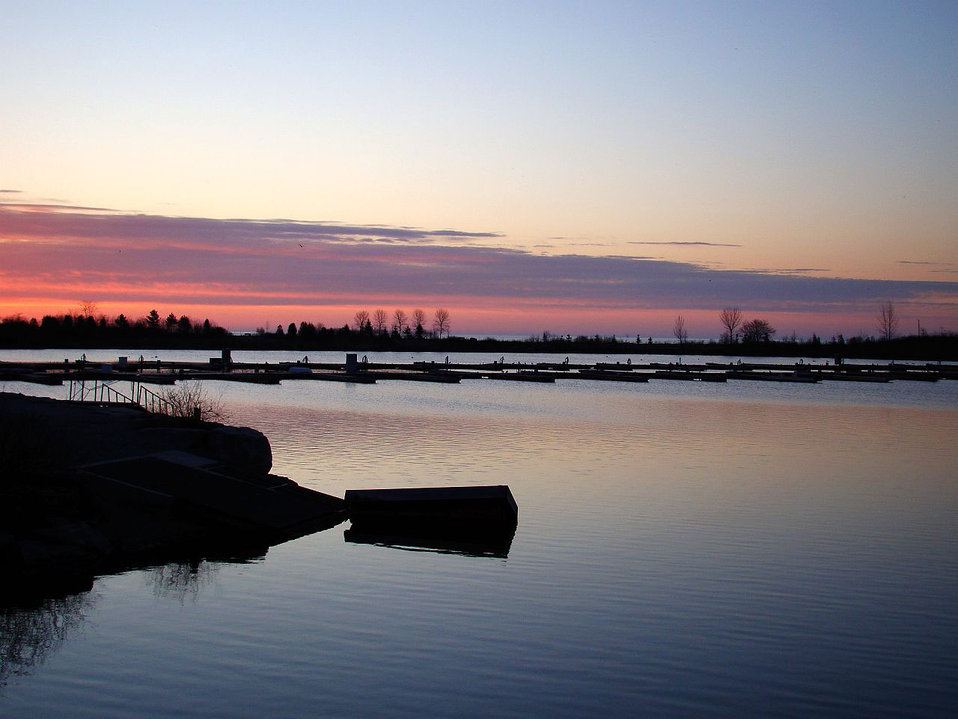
Empty boathouse

At daybreak looks like it will be a beautiful day.